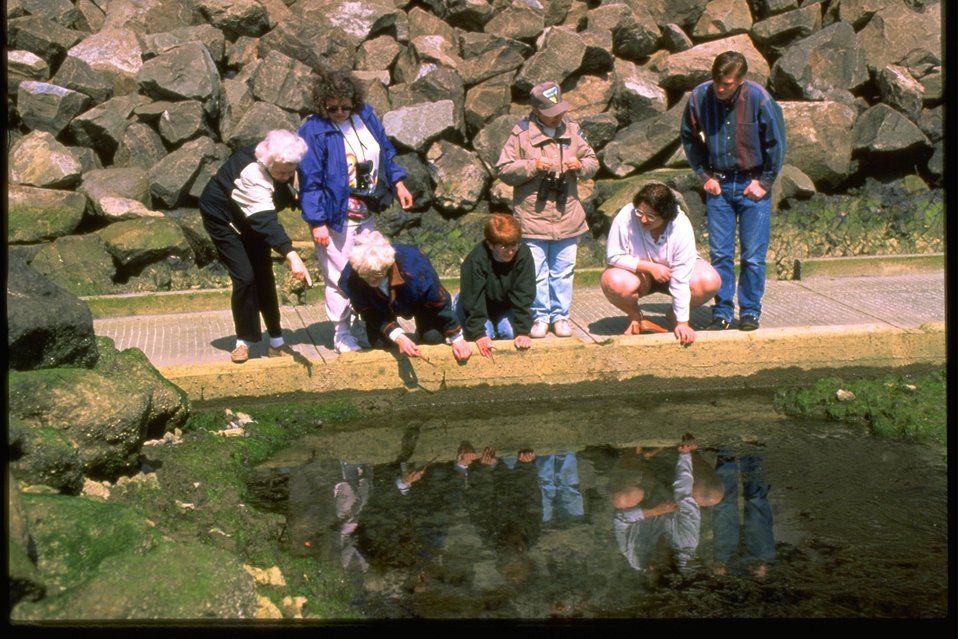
Programs at Yaquina Head Outstanding National Area accessible tidepools.